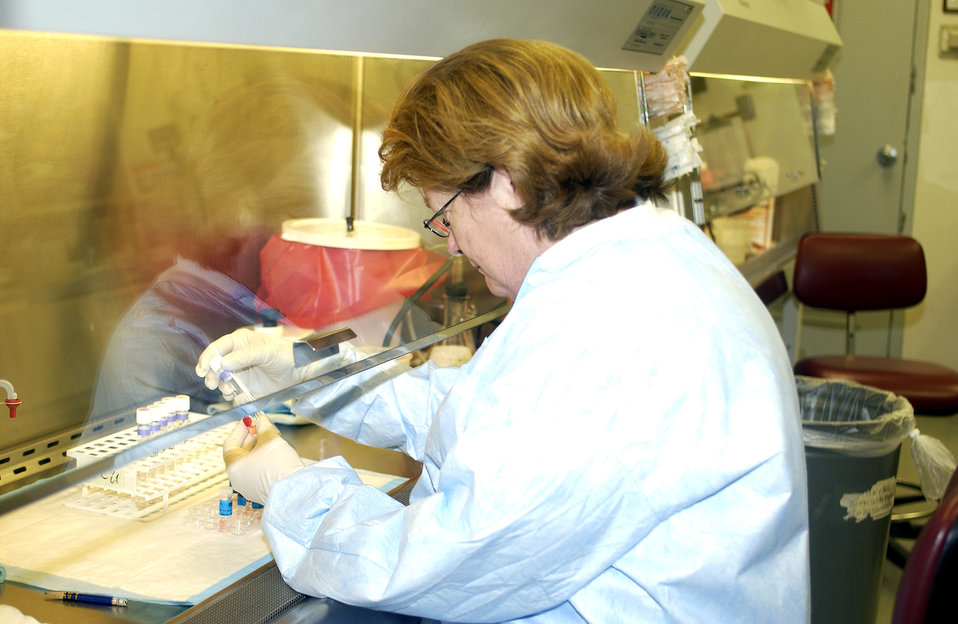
Avian flu

BROOKS CITY-BASE, Texas (AFPN) -- Lee Noel studies influenza strain samples. Mr. Noel is a technician at the Air Force Institute for Operational Health virology laboratory here.